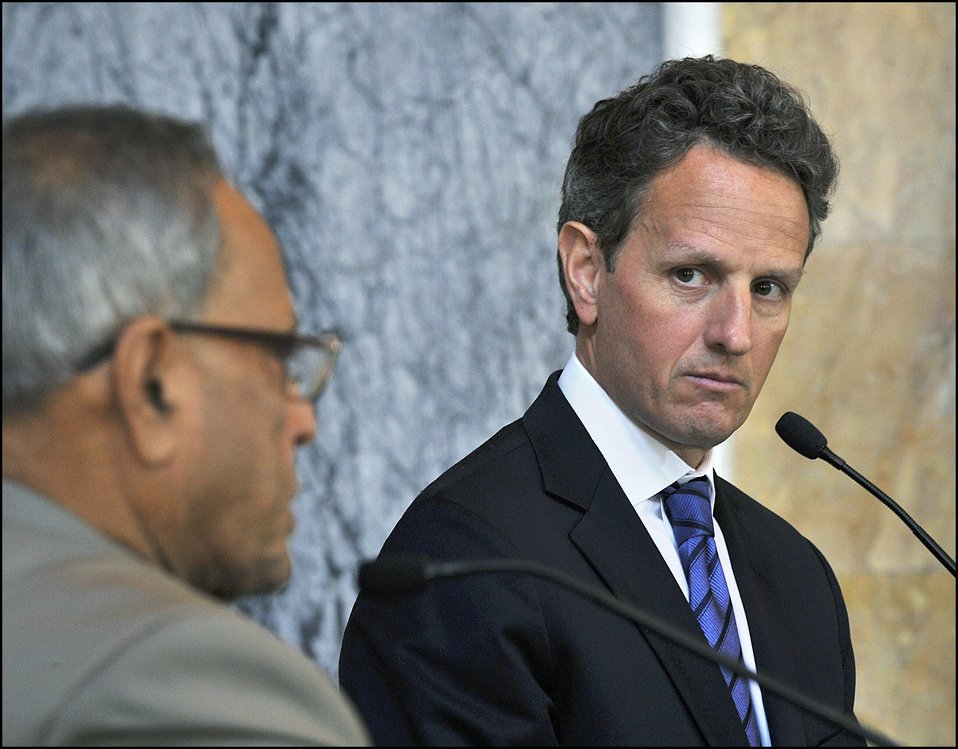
2011 U.S.-India Partnership

Treasury Secretary Tim Geithner looks on as Indian Finance Minister Pranab Mukherjee takes questions from reporters at a press conference during the 2011 U.S.-India Economic and Financial Partnership.